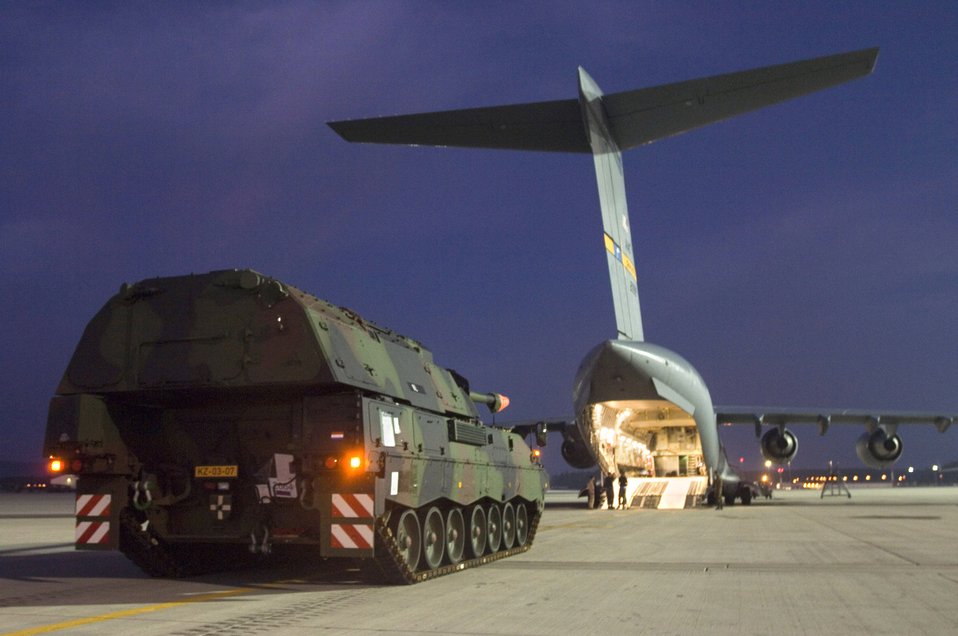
Howitzer takes flight

A Netherlander Howitzer 2000 waits to be loaded onto a C-17 Globemaster III at Ramstein Air Base, Germany, Sept. 6. The 60-ton tank will be flown to Afghanistan on board a C-17 from Charleston Air Force Base, S.C.